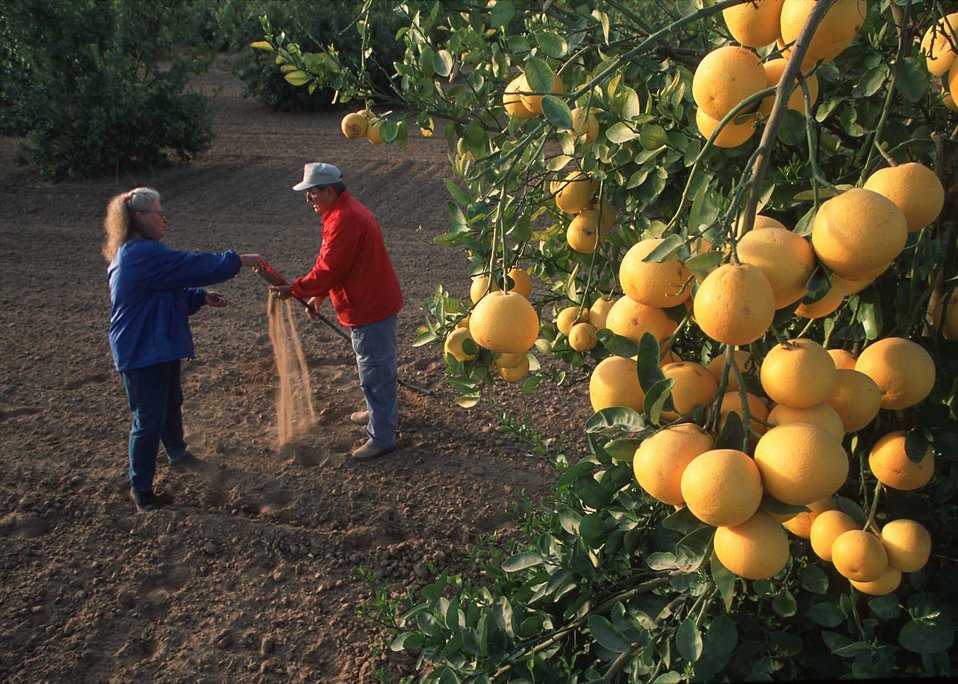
District Conservationist Bobbi McDermott and technician Neal Hoy test for soil moisture in an irrigated citrus (grapefruit) orchard in Yuma, Az.